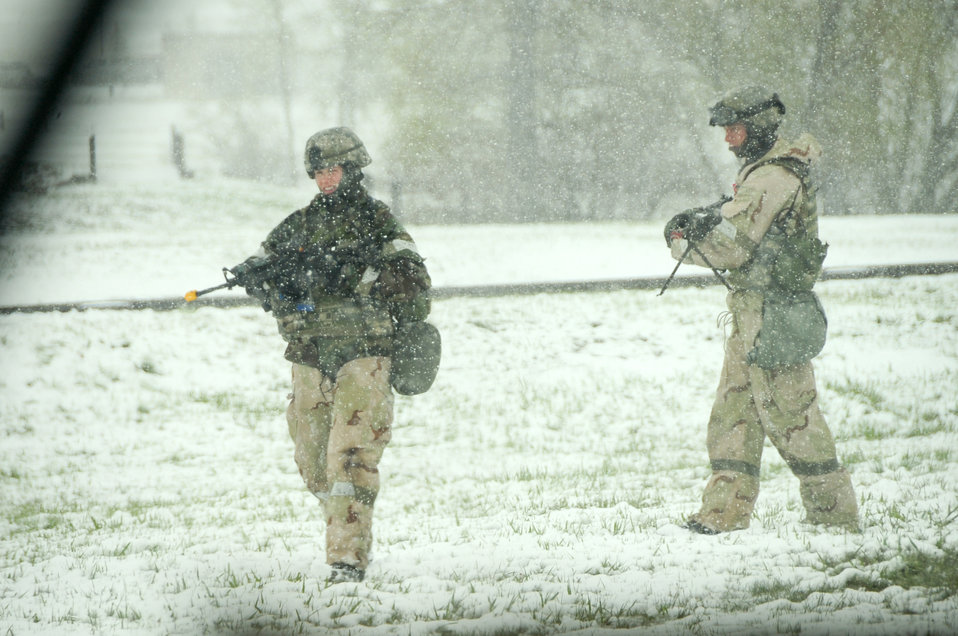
Ellsworth operational readiness exercise

Despite the unseasonably cold spring, Staff Sgt. Benjamin Pieta and Senior Airman Kristi Terwilliger patrol the area during an operational readiness exercise May 12, 2010, at Ellsworth Air Force Base, S.D. Sergeant Pieta and Airman Terwilliger are patrolmen with the 28th Security Forces Squadron.